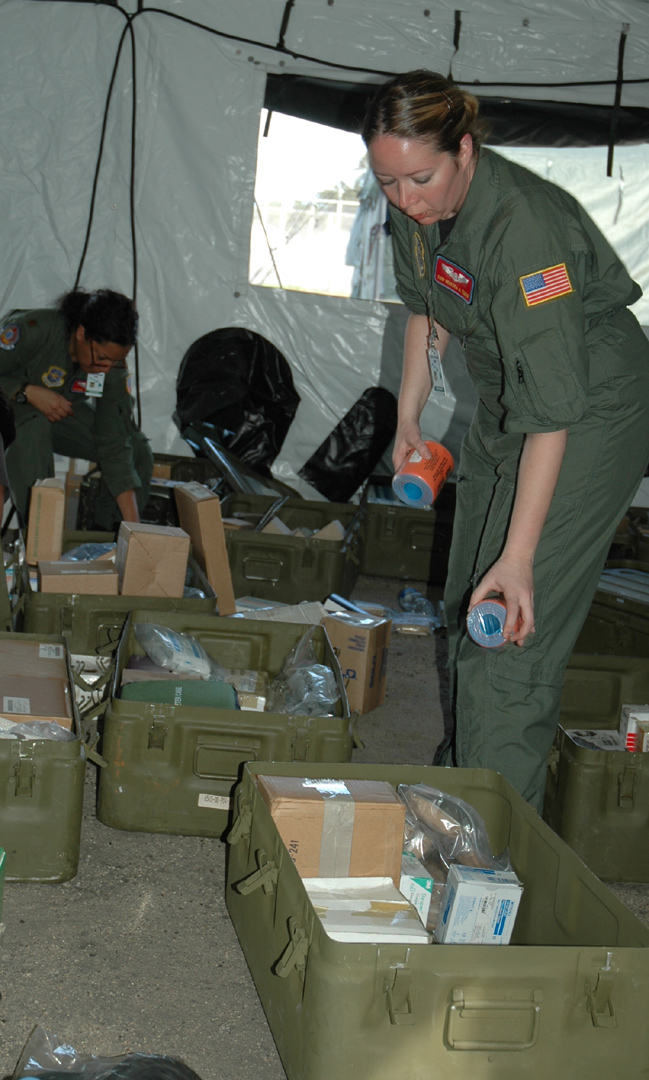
MASF not MASH vital location for wounded

Maj. Jackie Jackson and Senior Airman Rebecca Timms, inventory medical supplies Jan. 30 to use in the Mobile Aeromedical Staging Facility during the Pacific Lifeline exercise. Pacific Lifeline is a humanitarian assistance disaster response exercise taking place on three Hawaiian Islands Jan. 26 to Feb. 9. More than 900 Department of Defense personnel are participating. Major Jackson is a flight nurse and Airman Timms is a flight medic, both are with the 375th Aeromedical Evacuation Squadron at McChord Air Force Base, Wash.